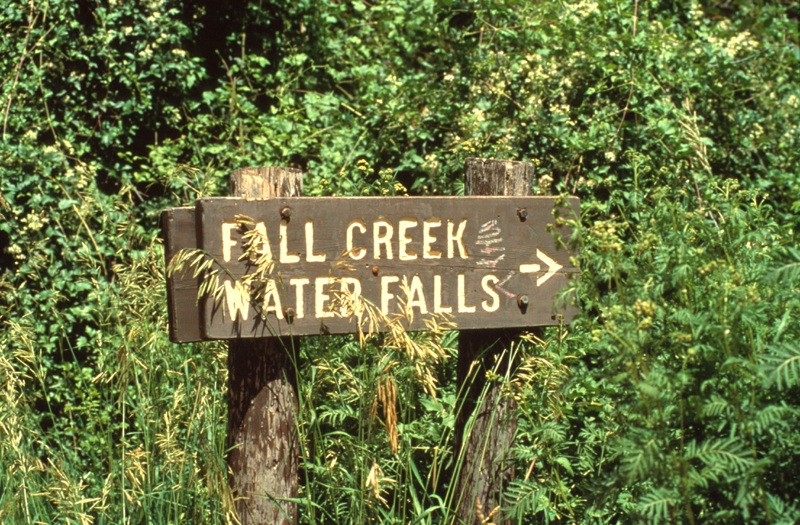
Fall Creek Falls Snake River Canyon